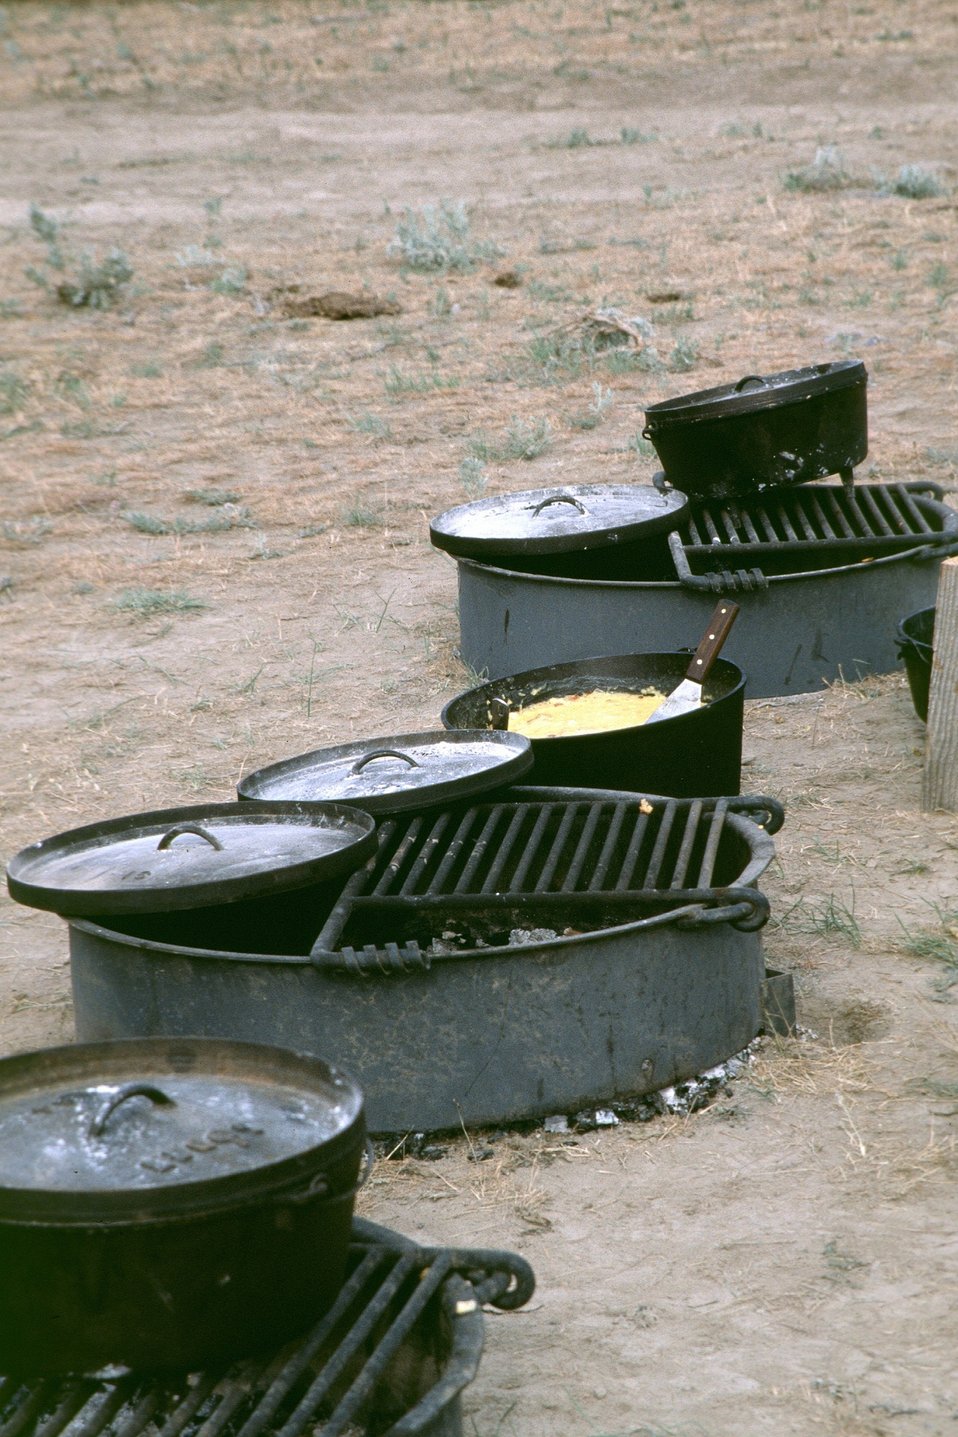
NHOTIC 10th Anniversary, wagon train reenactment. Pots, pans, and campfire at encampment.